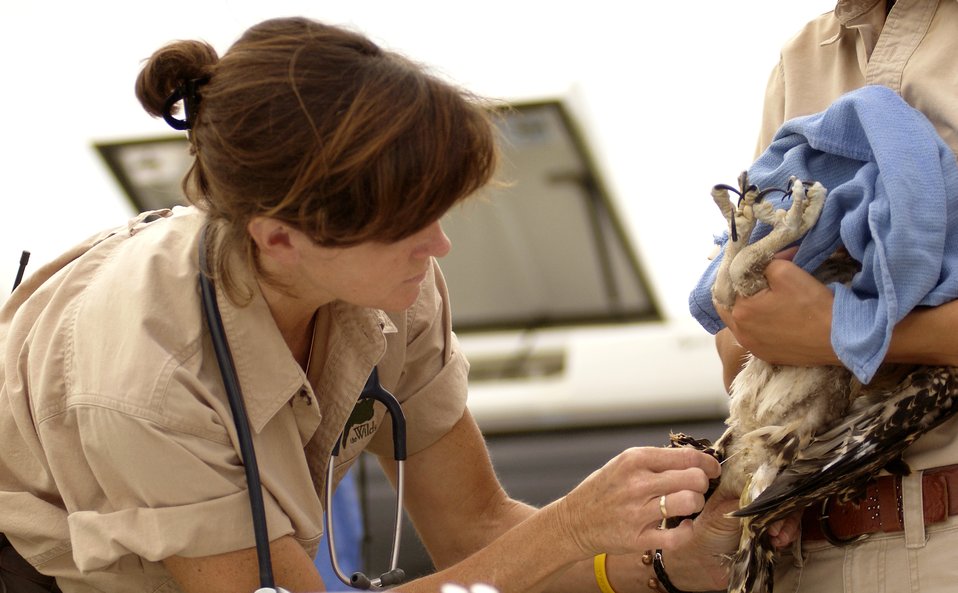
Ospreys, Eagles share airspace at Langley

CUMBERLAND, Ohio -- Dr. Barbara Wolfe tests a recently relocated osprey from Langley Air Force Base, Va., for West Nile Virus at a conservation facility here. The 10,000-acre facility is the largest such facility in North America and is home to 200 animals and 24 different species. Eleven osprey were relocated from Langley to a conservation facility in Cumberland, Ohio, to control the population and minimize the risk of potential bird strikes. Dr. Wolfe is a veterinarian with the facility.